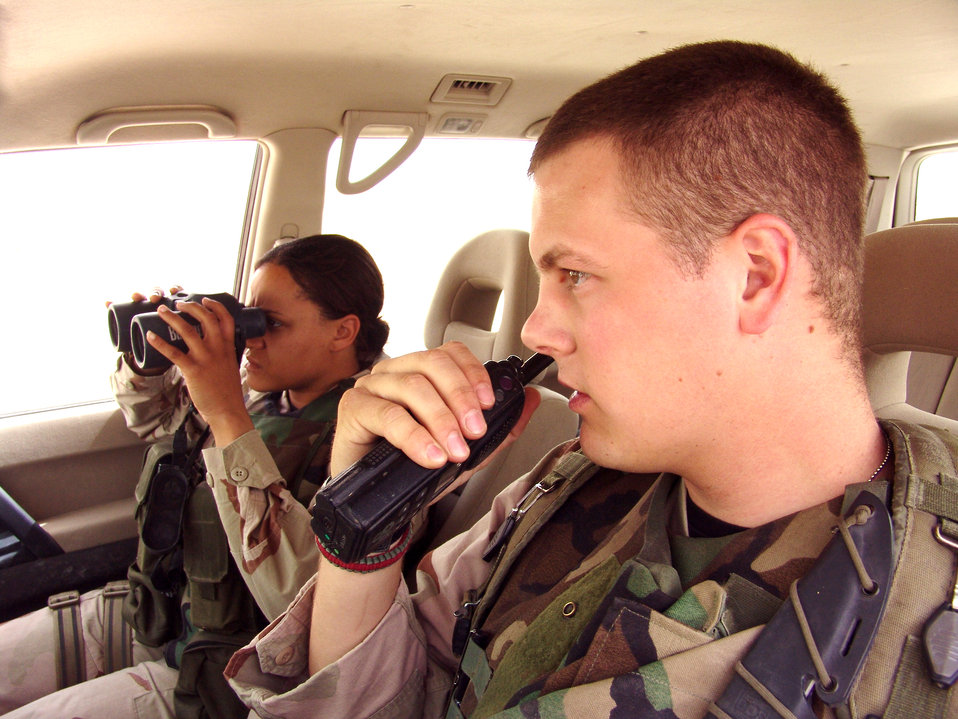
All secure

SOUTHWEST ASIA -- Airman 1st Class Desire Joe (left) and Senior Airman Stephen Phillips look for suspicious people and vehicles on the base's perimeter at a forward-deployed location. Airmen provide surveillance coverage for more than 120 square miles of territory outside the base perimeter and are the first line of defense against enemy infiltration and attack. The Airmen are assigned to the 386th Expeditionary Security Forces Squadron. Airman Joe is deployed from Kadena Air Base, Japan, and Airman Phillips is deployed from Maxwell Air Force Base, Ala.